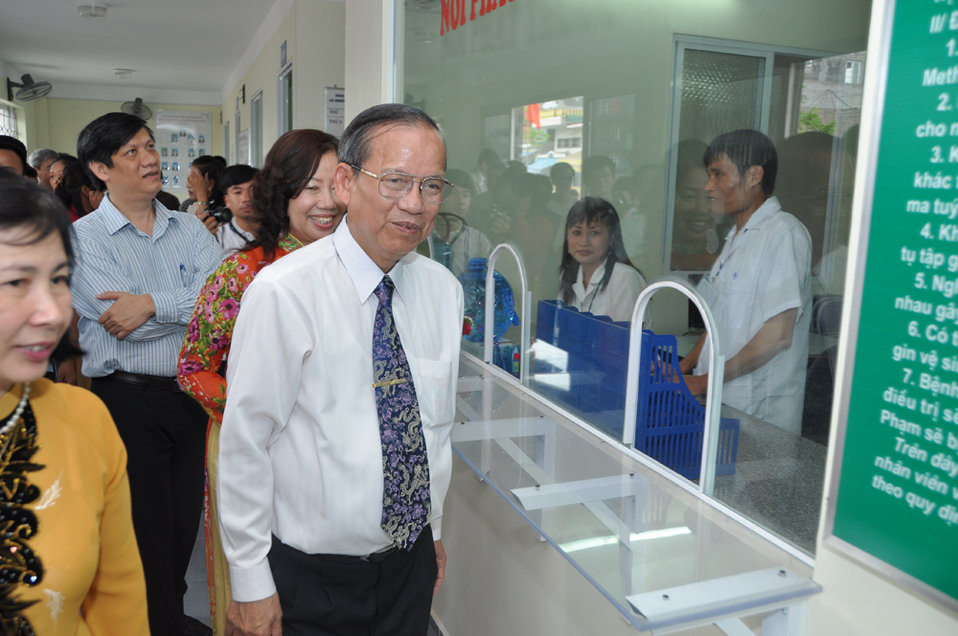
Co-pay Methadone Treatment Center Opens in Hai Phong on June 18, 2011

Deputy Prime Minister Truong Vinh Trong.